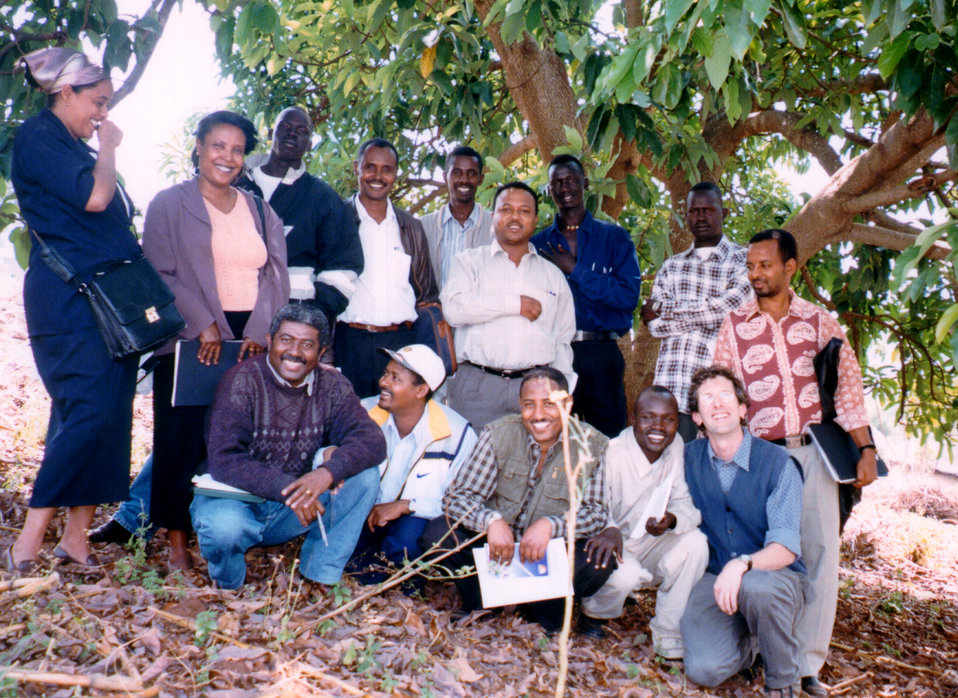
This team was studying the ethnographic assessment of malaria during pregnancy in Jimma, Ethiopia in February, 2001.